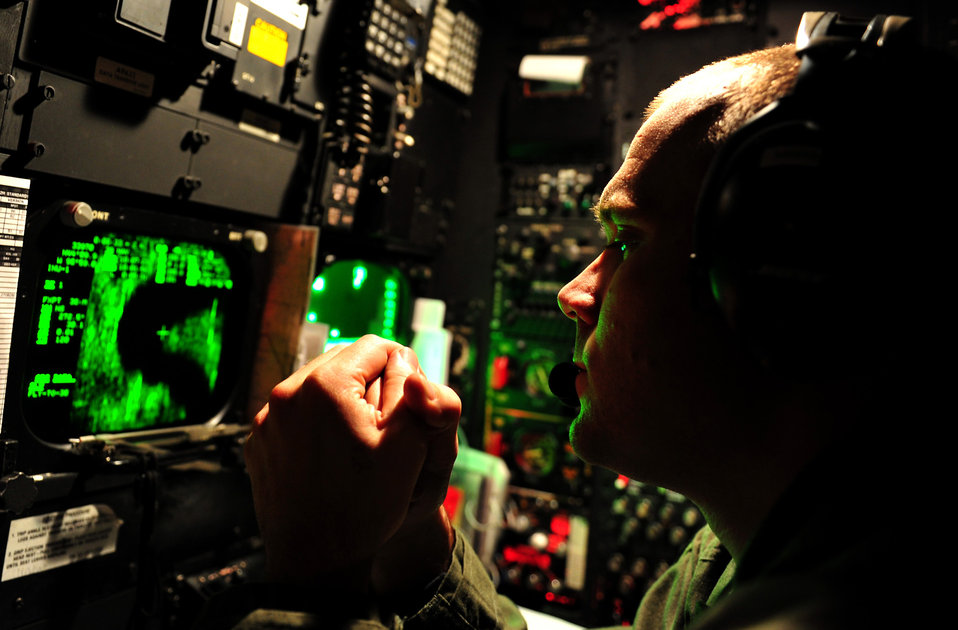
Getting ready to fly

An Aircrew member assigned to the 23rd Bomb Squadron performs a preflight check aboard a B-52 Stratofortress April 20, 2011, at Minot Air Force Base, N.D., prior to a mission.